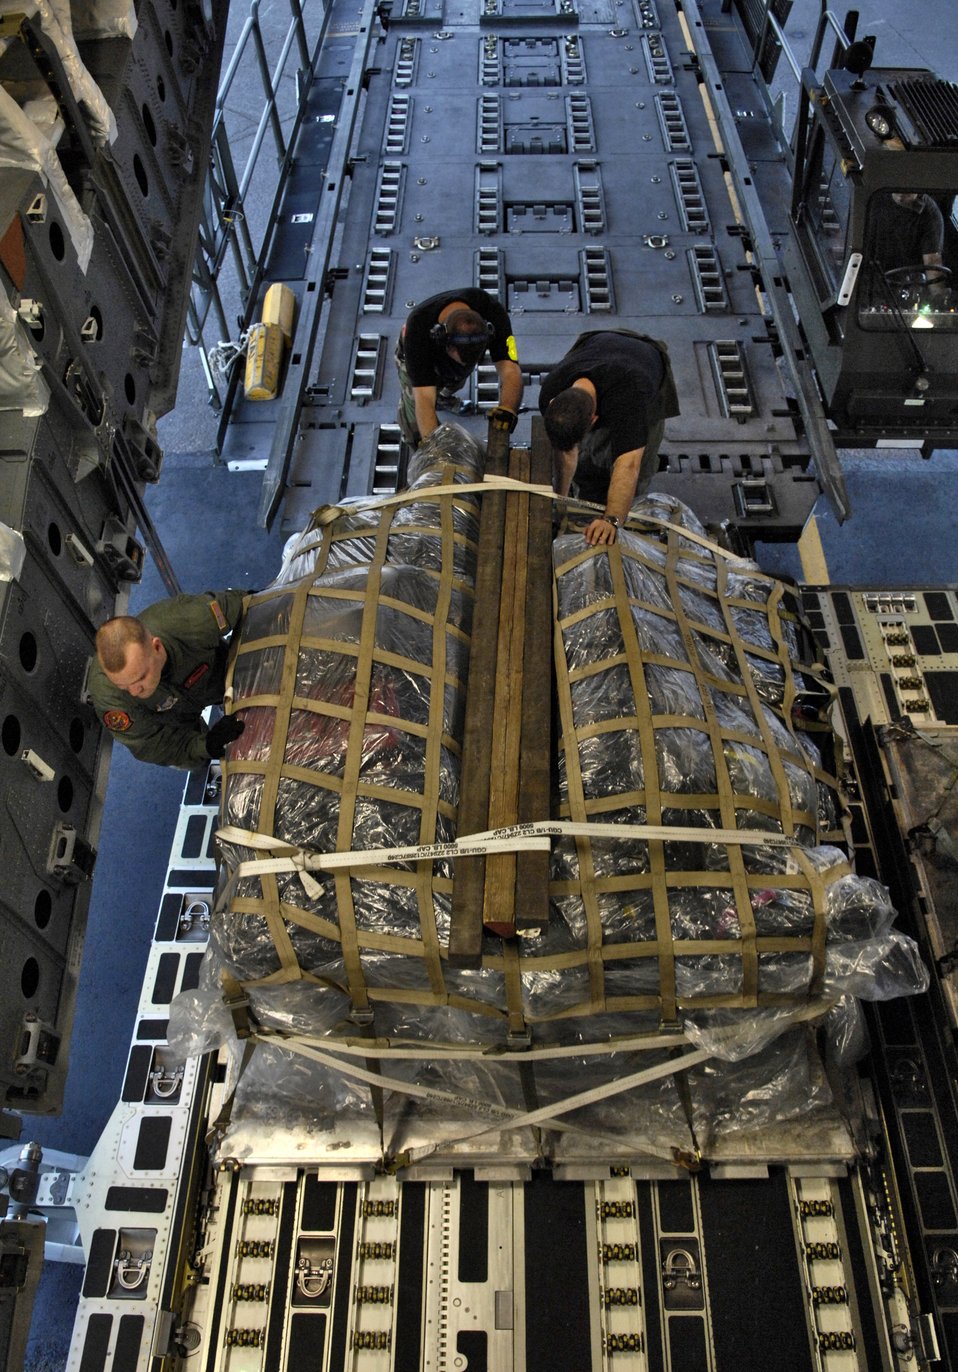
C-17 delivers strategic capability

0Staff Sgt. Jason Scaffidi helps load a pallet onto a C-17 Globemaster III Jan. 25 at Hickam Air Force Base, Hawaii. Sergeant Scaffidi is a loadmaster with the 535th Airlift Squadron. The C-17 can take off and land on runways as short as 3,500 feet and only 90 feet wide. Even on such narrow runways, the C-17 can turn around using a three-point star turn and its backing capability.